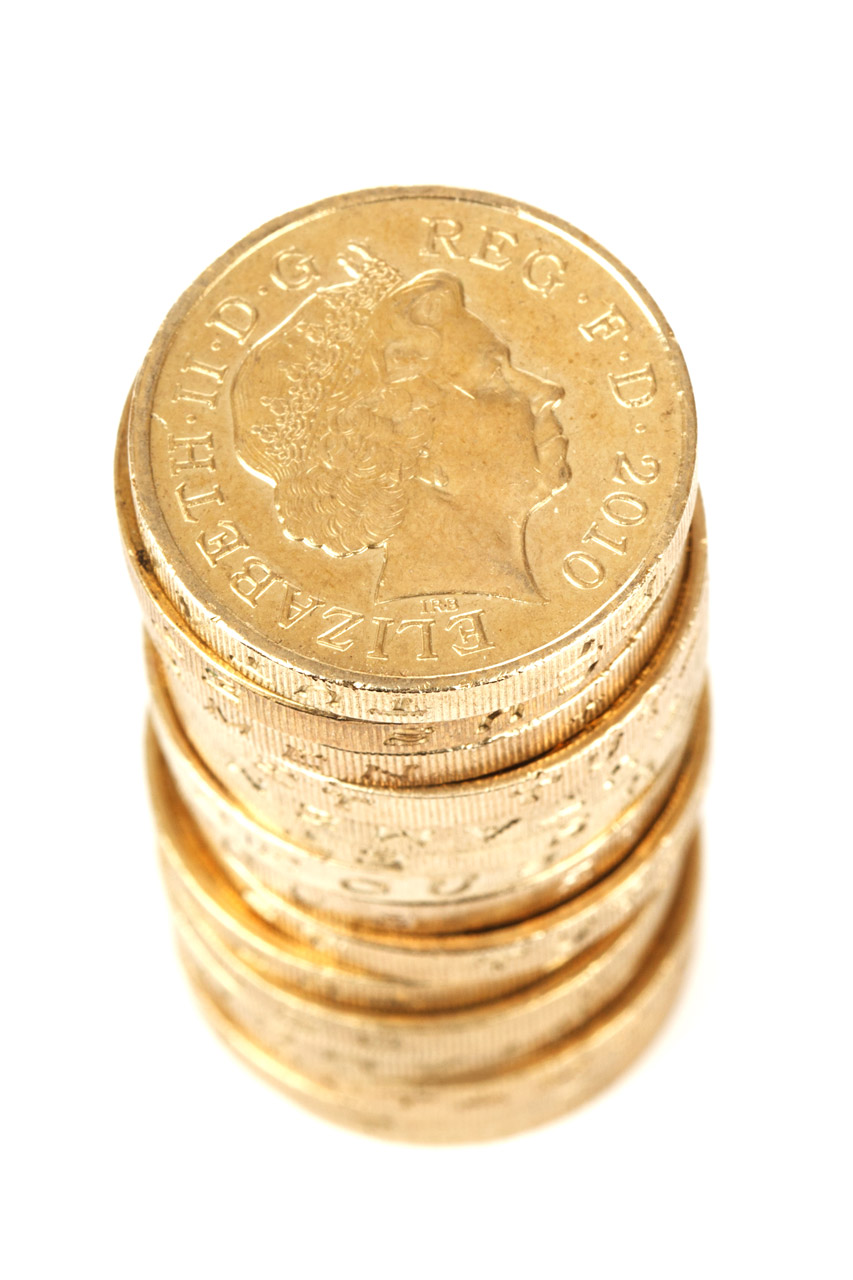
Stack of coins isolated

A stack of british one pound coins isolated on white background.